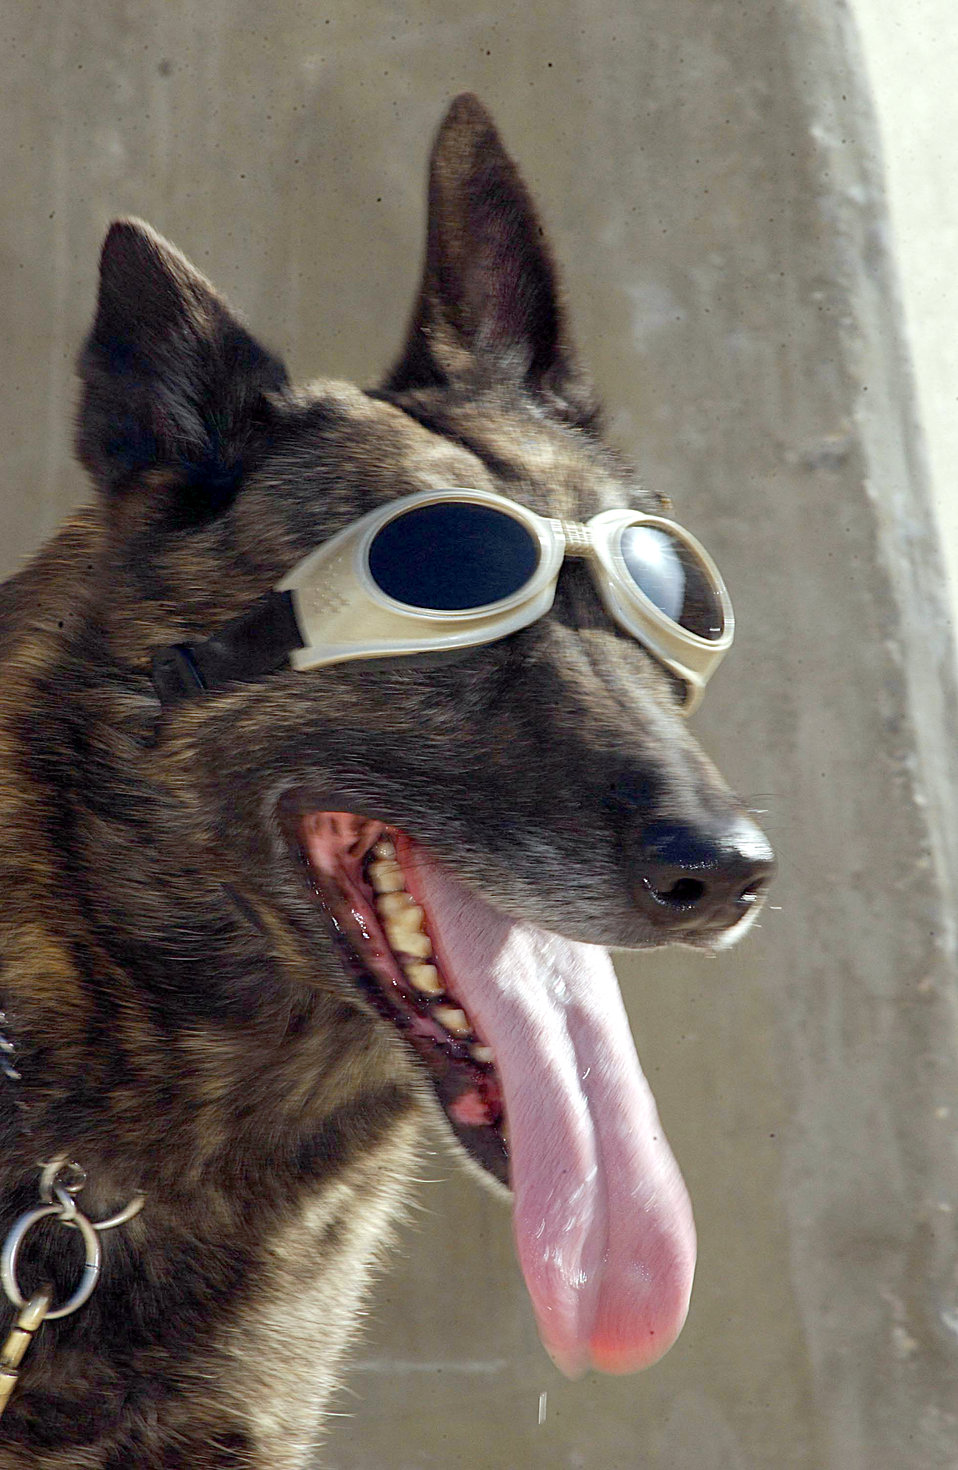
Cool pooch

SOUTHWEST ASIA -- Zorro relaxes in his sun goggles after a vigorous afternoon of training at forward-deployed location Jan 1. Zorro is a military working dog for the 379th Expeditionary Security Forces Squadron.